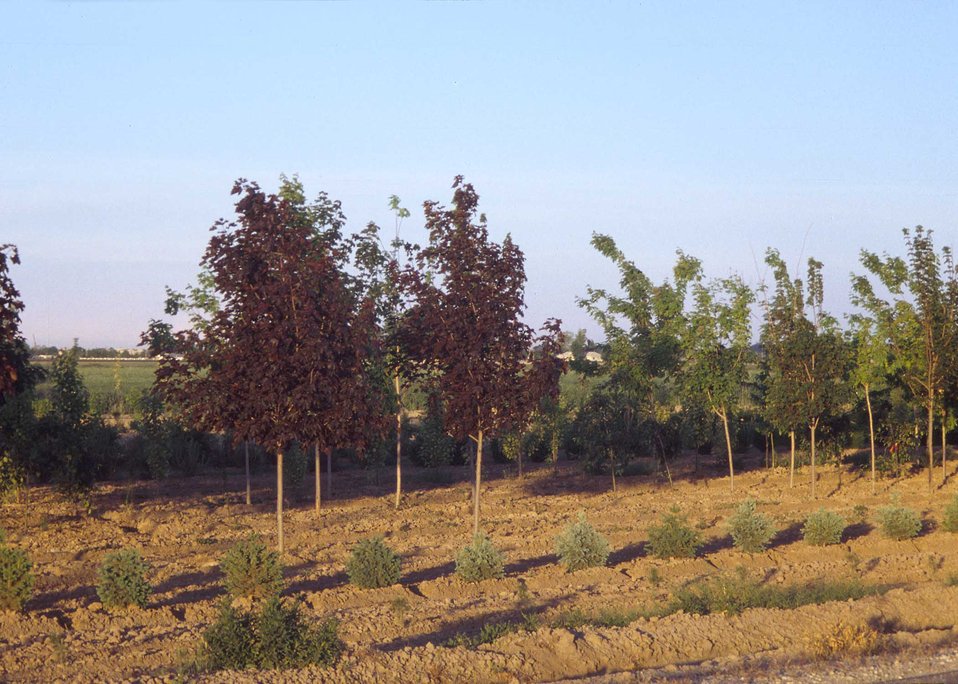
Critical wildlife habitat is being restored through the Wildlife Habitat Incentives Program.